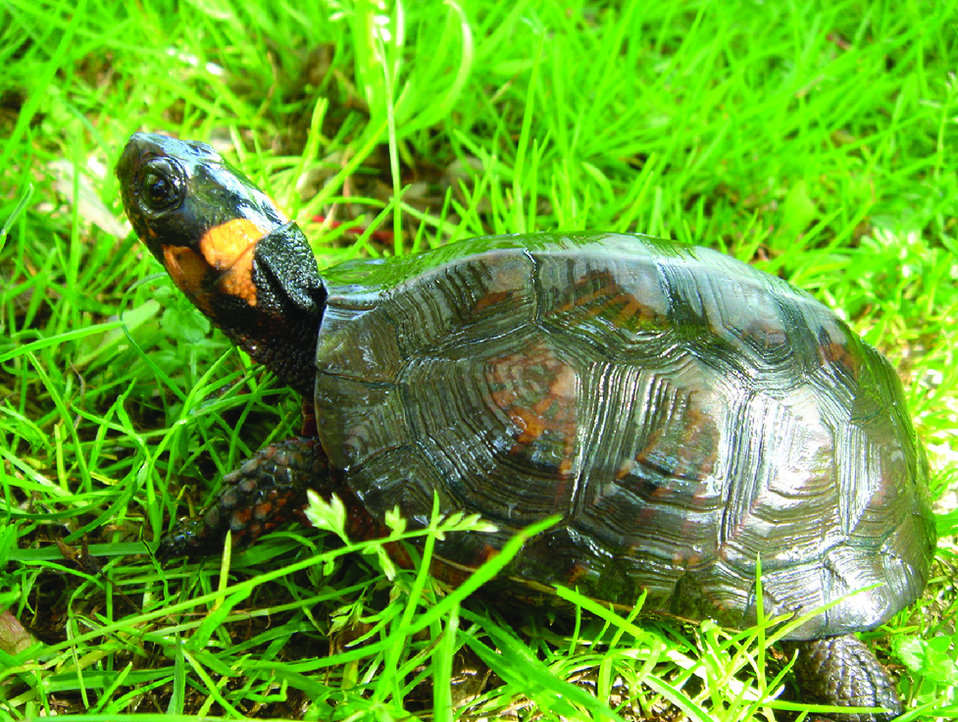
Bog turtle

Scientific name: Clemmys muhlenbergii
Status: Threatened and Similarity of Appearance

Bog turtles are darkly colored with a bright yellow, orange or red blotch on each side of the head.